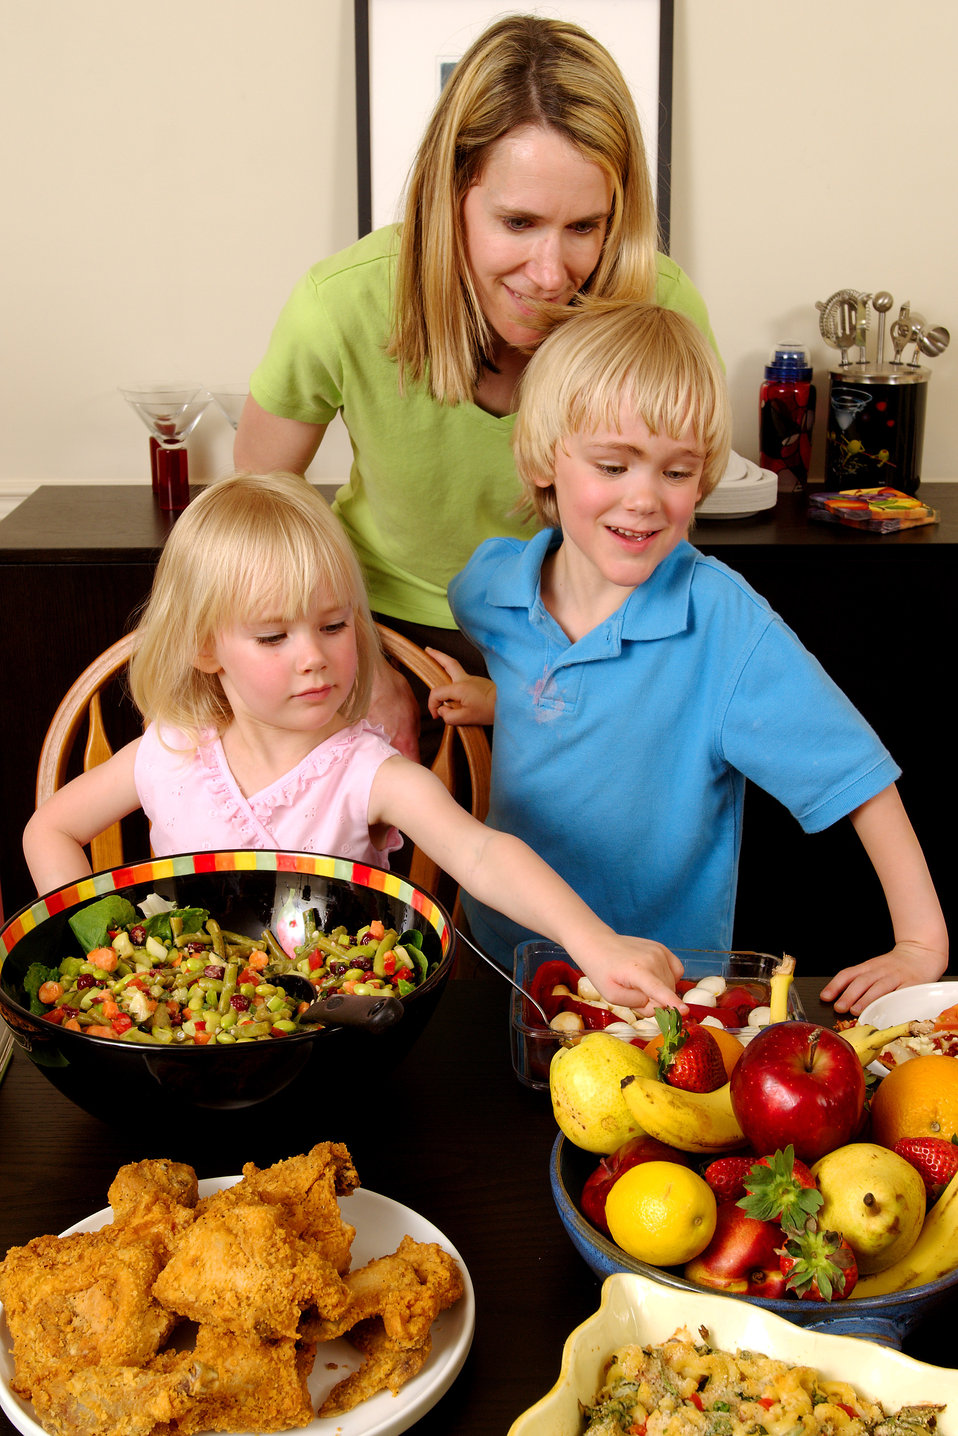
This image depicts a mother and her two young children at a dining table, upon which was plated a large quantity of foods representing a number of different food groups: grains, fruits, vegetables, milk products, meats/poultry/fish, and nuts/seeds/legumes. All these foods are quite tasty, but some are more nutrient-dense than others, while others are more calorie-dense than the rest. The mother is watching her children pick and choose which foods interests them, and seems to be quite happy with their choice in the bowl of fresh fruits, which are nutrient-dense, high in vitamins, minerals, and antioxidants.